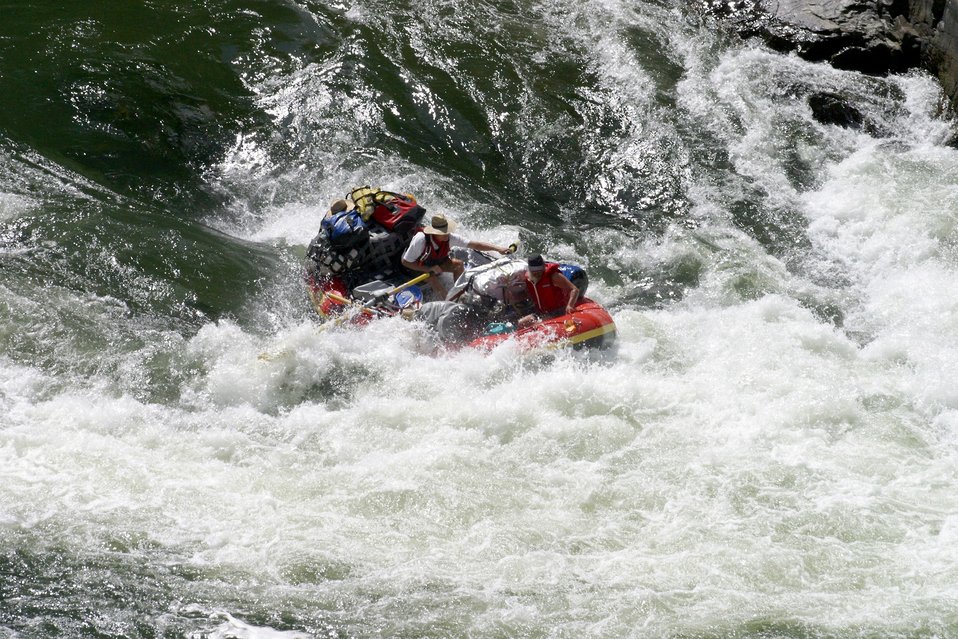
Boater at Grave Creek Falls